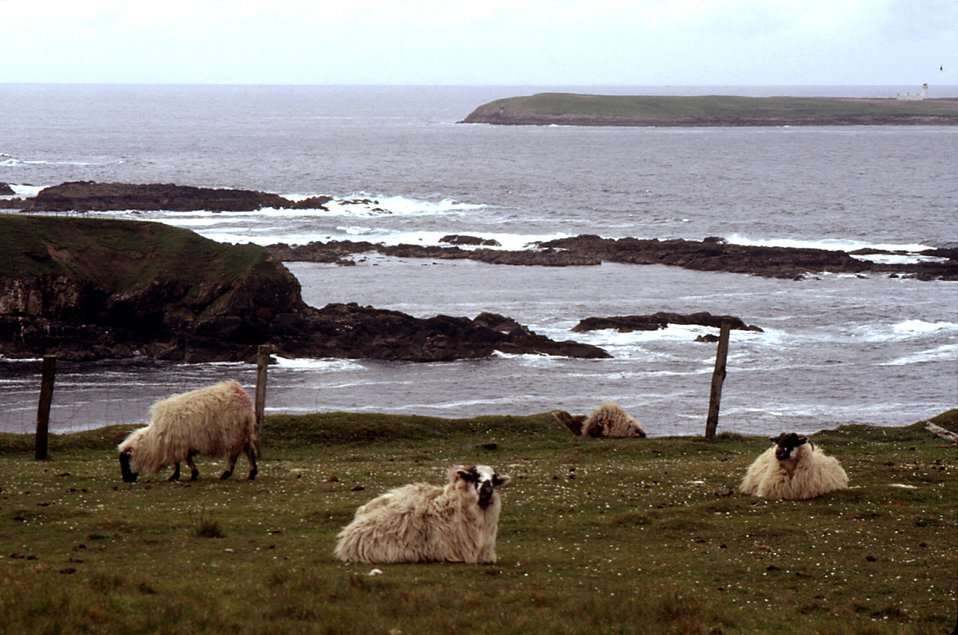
sheep

These domestic sheep were lying on a hillside in Clencolumkille, County Donegal, Ireland with the Atlantic Ocean in the background. In 2004, Ireland had almost 7 million domestic sheep. That year, the Irish state exported approximately 51,500 tons of sheep meat valued at 165 million euros. While important to national economies, livestock industries can present health hazards for both producers and consumers.Diseases that can be transmitted from animals to humans are called zoonoses. Q Fever, Coxiella burnetti, is a disease passed to humans from sheep. People working around domestic sheep should consider getting vaccinated against this disease. The disease can be acquired from the inhalation of aerosolized barnyard dust should it contain infected dried urine, manure particles, or dried fluids from the birth of calves, or lambs.